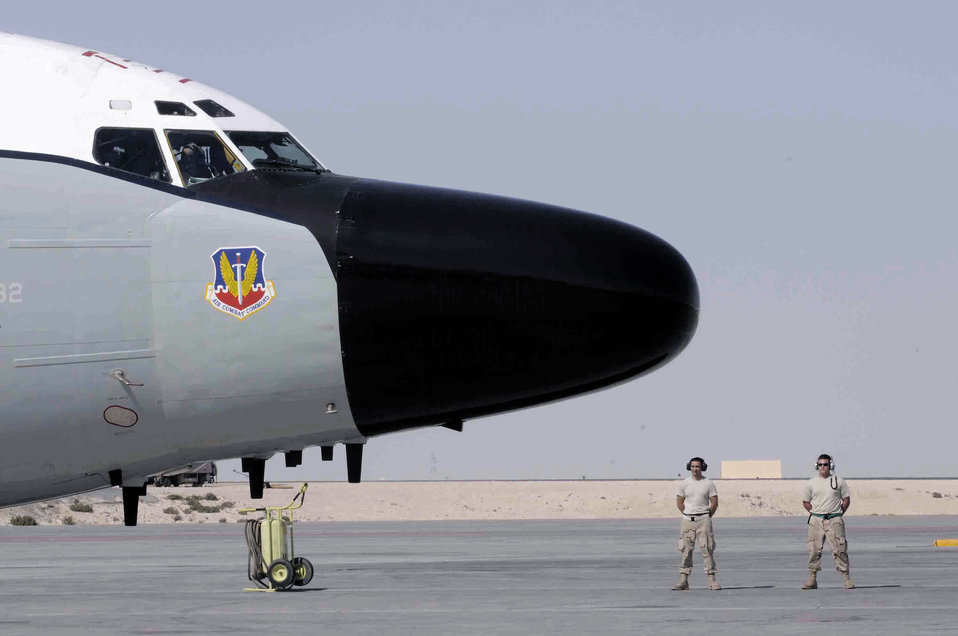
RC-135 surpasses 50,000 flying-hour mark

Airman 1st Class Dock Caudhill and Staff Sgt. Casey Bode stand by for an RC-135 Rivet Joint to taxi March 12 at a Southwest Asia air base. Airman Caudhill and Sergeant Casey ensure aircraft has proper wing clearance from any obstructions before departing parking spot. Airman Caudhill and Sergeant Casey are assigned to the 379th Expeditionary Aircraft Maintenance Squadron and deployed from Offutt Air Force Base, Neb.